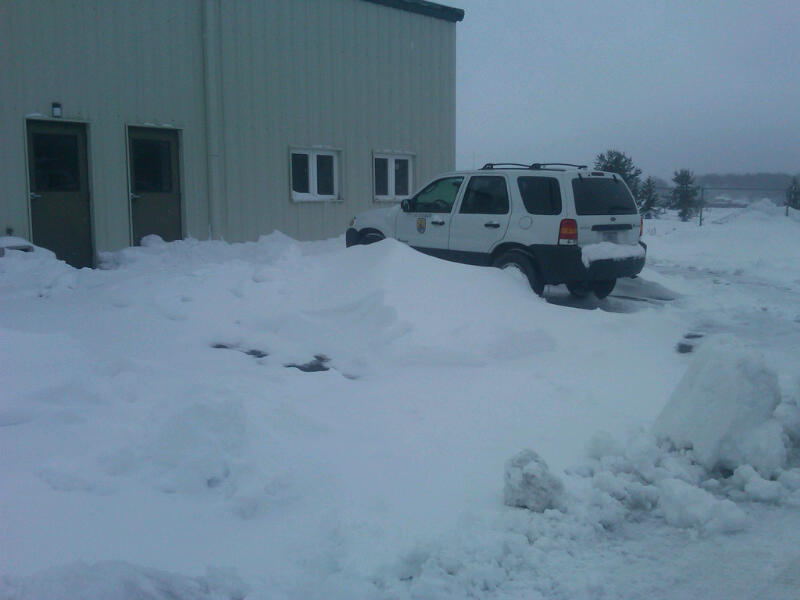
Hurricane Sandy snows at Canaan Valley National Wildlife Refuge (WV)

Hurricane Sandy dumped over two feet of snow at Canaan Valley National Wildlife Refuge. The refuge is assisting Tucker County with snow removal.